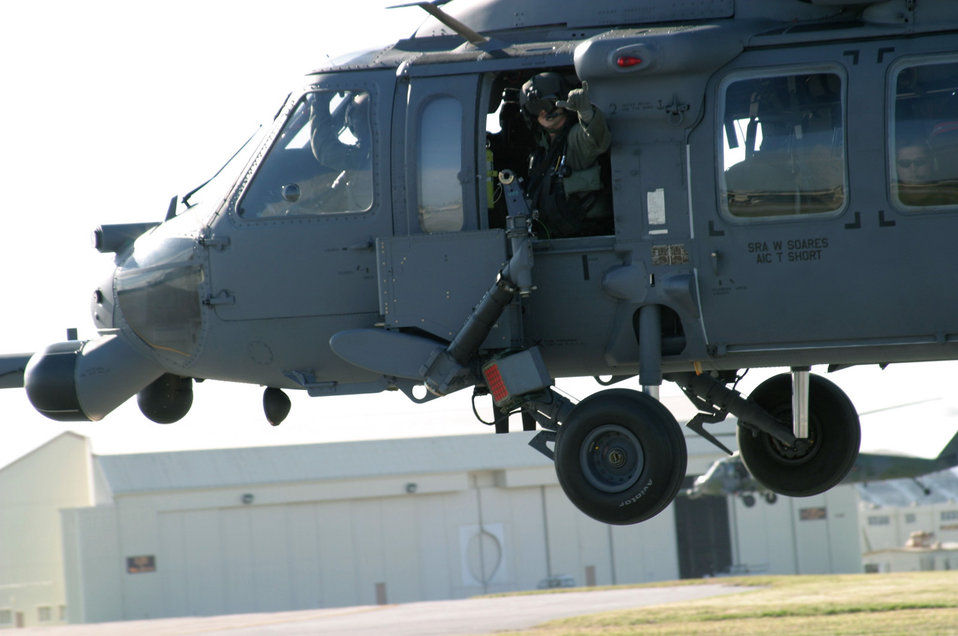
Ready to go

KADENA AIR BASE, Japan -- Tech. Sgt. Keith Kleinert, a 33rd Rescue Squadron aerial gunner, waves as his HH-60 Pave Hawk helicopter takes off from here Dec. 9 for a mission to the storm-devastated Philippines. Three HH-60s from the 33rd RQS, two MC-130 Combat Shadows from the 353rd Special Operations Group and a 909th Air Refueling Squadron KC-135 Stratotanker launched from here to provide humanitarian assistance to nearly 170,000 people displaced by Typhoon Nanmadol.